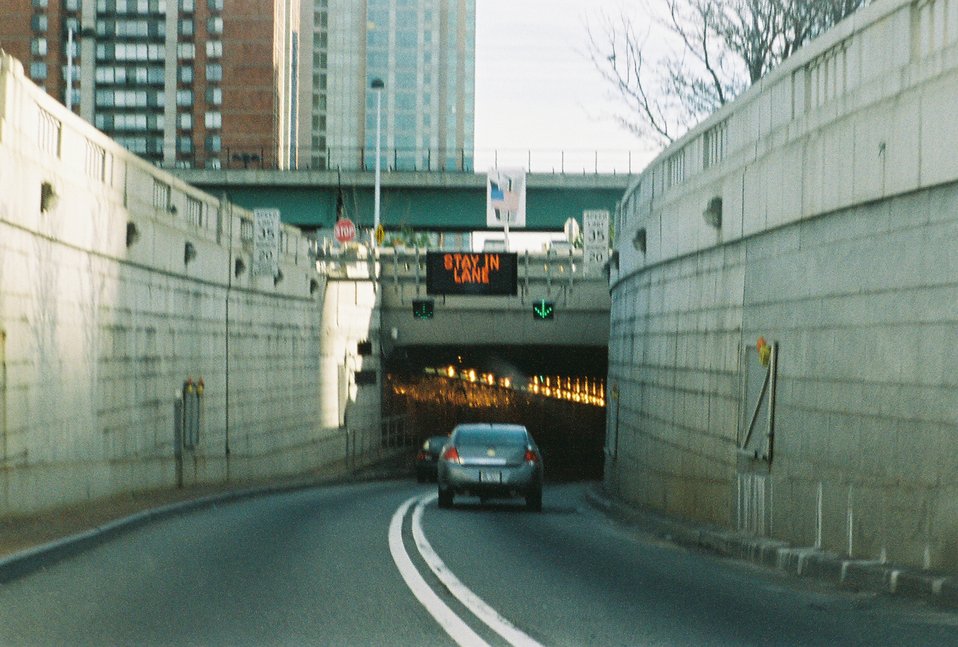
Holland Tunnel NJ Entrance